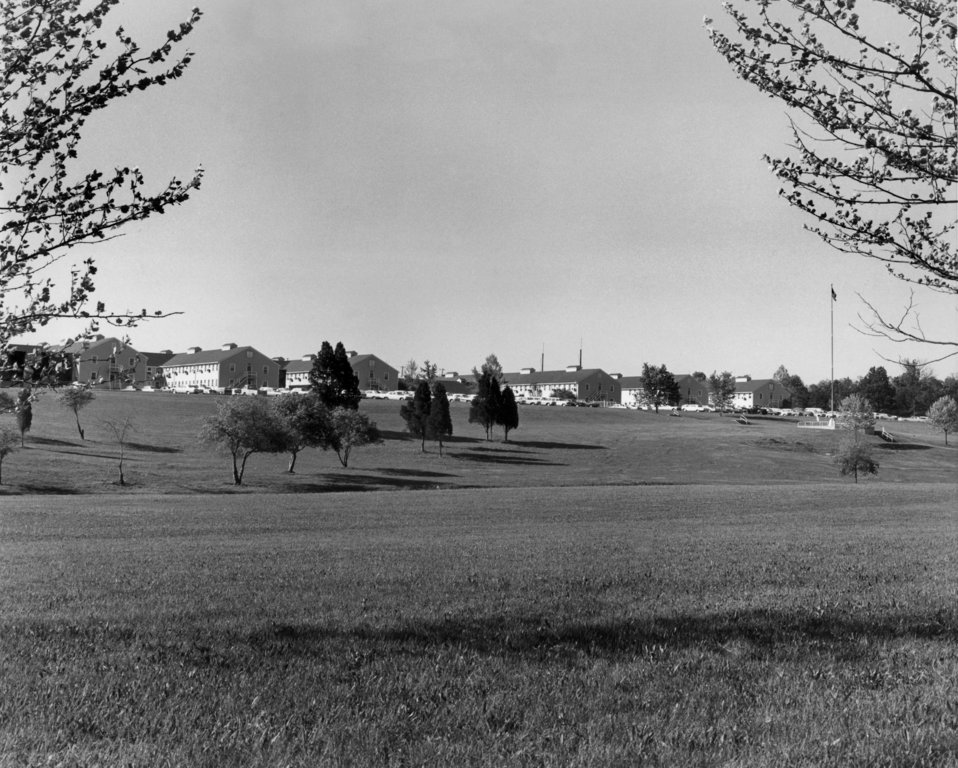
USAEC Admin. Bldg. Exterior View Oak Ridge

66-189-5 DOE photo Ed Westcott May 1966 Oak Ridge Tennessee
Currently housing some 475 people and containing approximately 150,000 square feet of offices, conference rooms, libraries, and a cafeteria, the 'GSA yellow' Administration Building has witnessed more than twenty-five years of history. With the exception of some minor landscaping changes, and an occasional new coat of paint, the building and its massive front lawn have been a constant local symbol of the pioneering era of atomic energy.